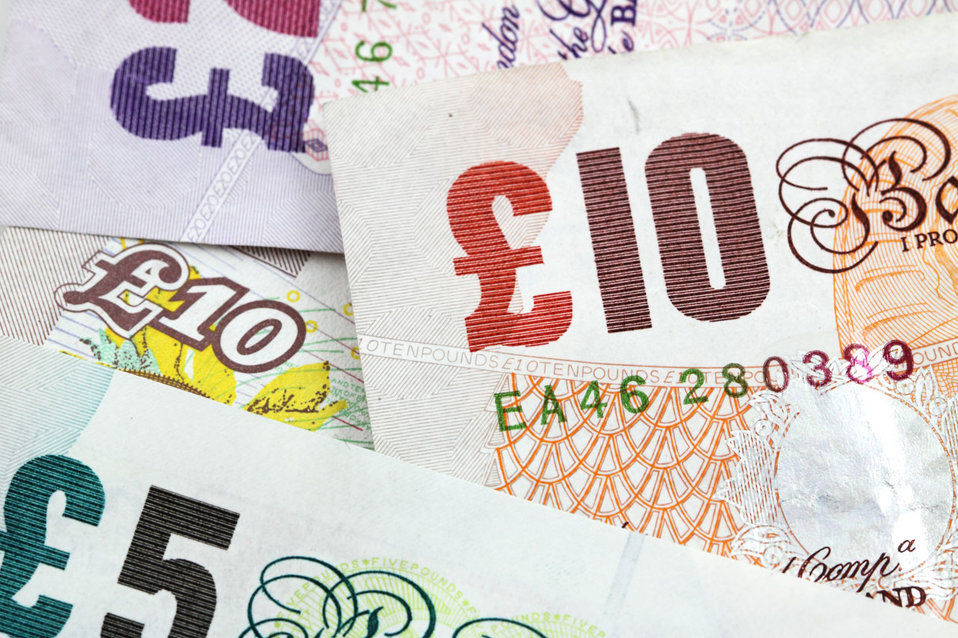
Pound sterling

Several banknotes as a background.